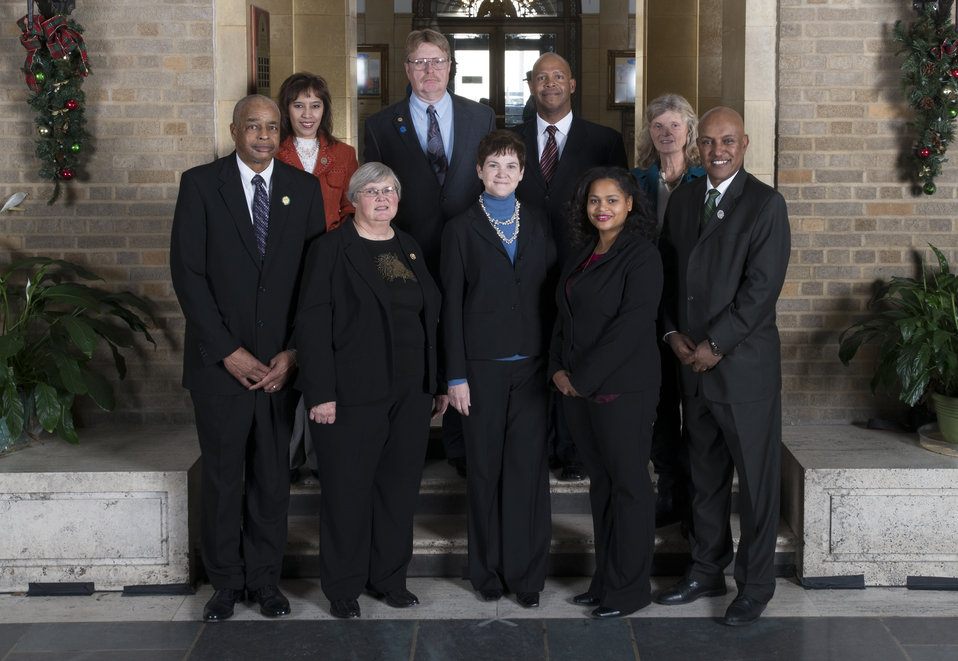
Agriculture Deputy Secretary Krysta Harden stands with the Third Thursday Team, Kentucky State University from Frankfort, KY on the patio at the U.S. Department of Agriculture (USDA) in Washington, D.C. on Wednesday, Dec. 11, 2013. The team received the Secretary’s Honor Award for developing and sustaining an educational program that empowered over 12,000 farmers and positively impacted the quality of life and economic vitality of rural communities.